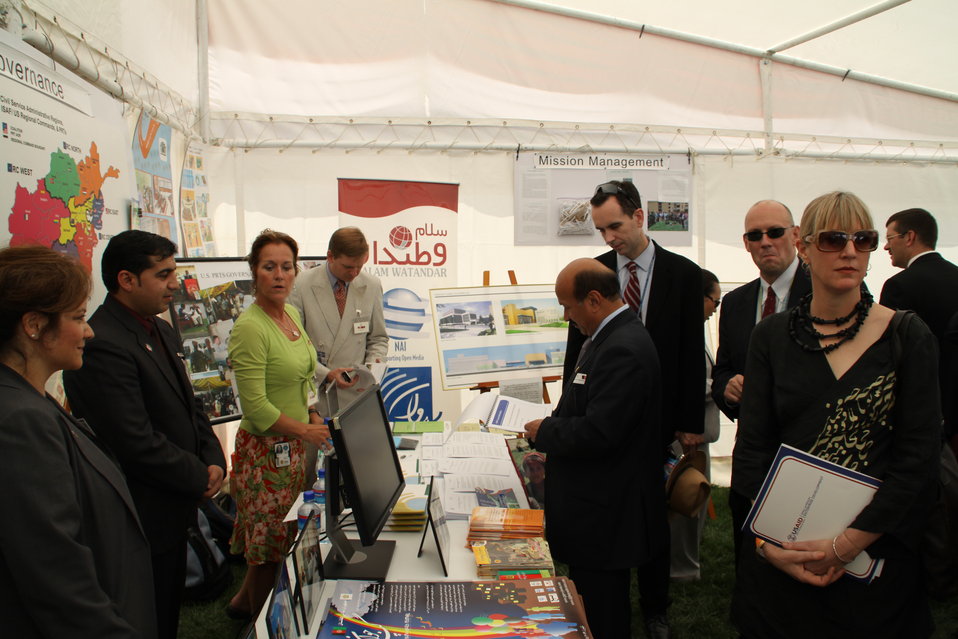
Kabul Official July 4th Celebration